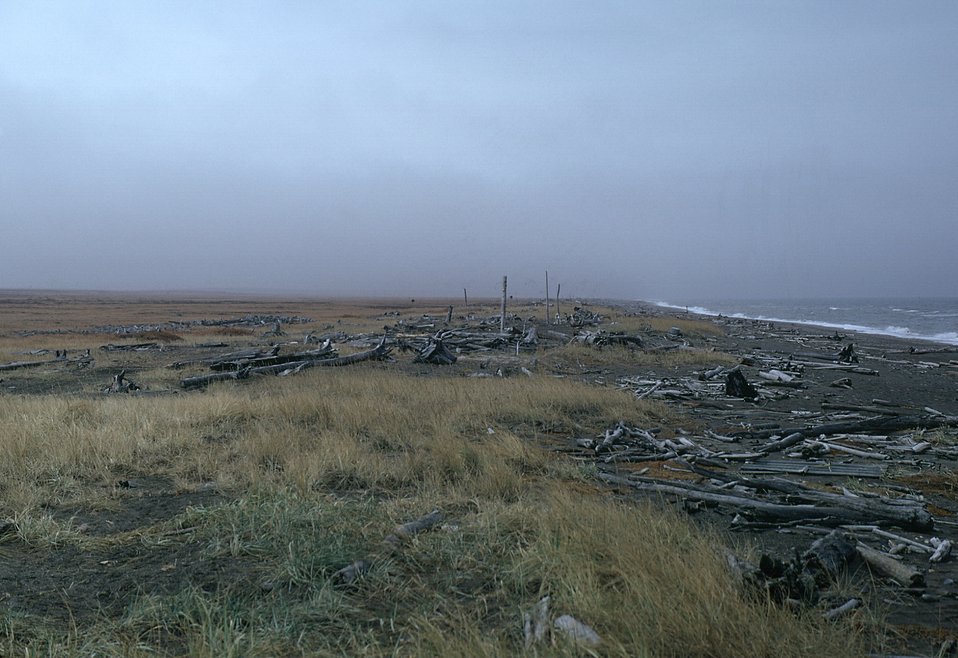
Nome beaches, Seward Peninsula